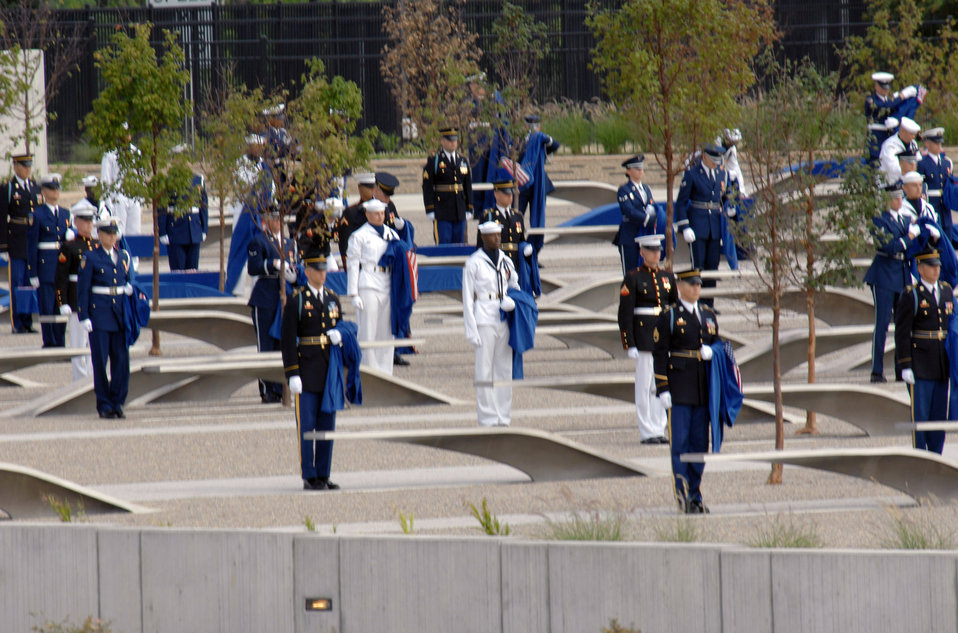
Remembering Sept. 11 Pentagon victims

Outside the Pentagon, 184 members from each service unveil the Pentagon Memorial Sept. 11. The memorial has 184 benches, each dedicated to a victim of the Sept. 11, 2001, attack -- 59 people aboard American Airlines Flight 77 and the 125 in the building.